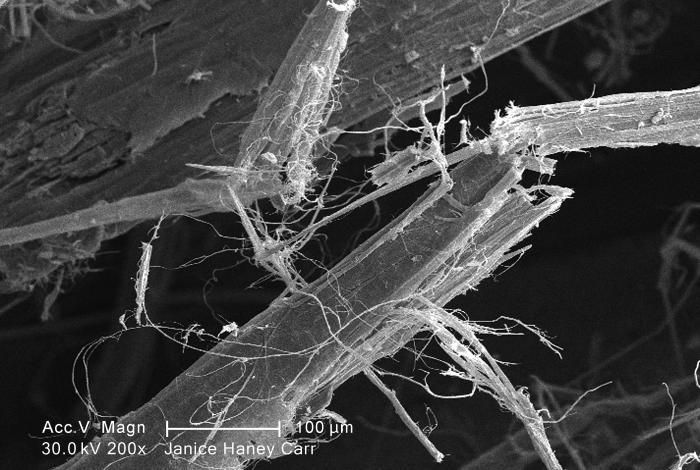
Under a moderate magnification of 200X, this scanning electron micrograph (SEM) revealed some of the microcrystalline ultrastructure exhibited by a piece of raw chrysotile, or white asbestos, which had been excavated from the Lowell Asbestos Mine on Belvidere Mountain, Vermont.